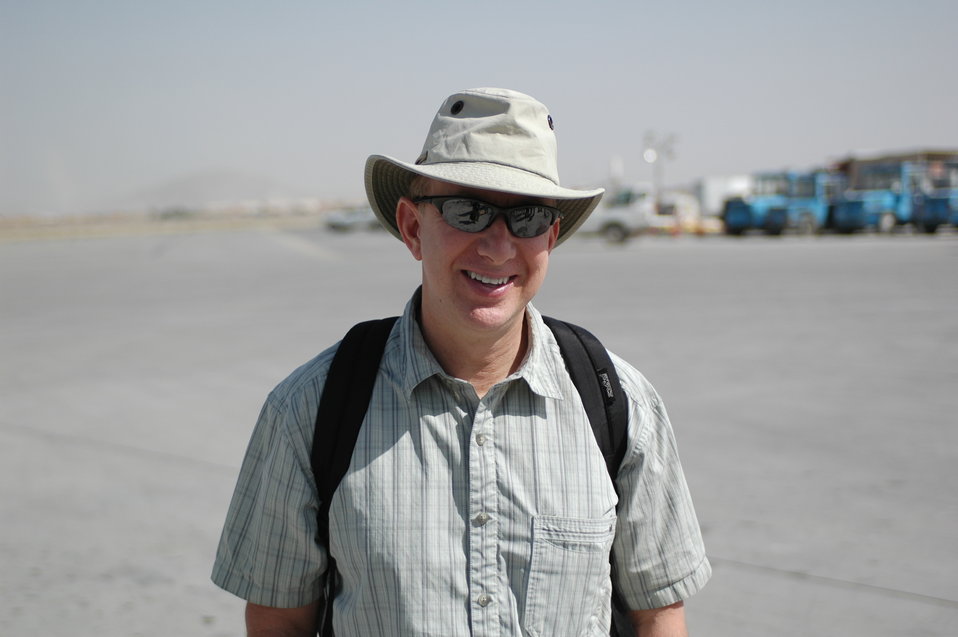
Dr Shah Visits Kandahar April 9, 2010